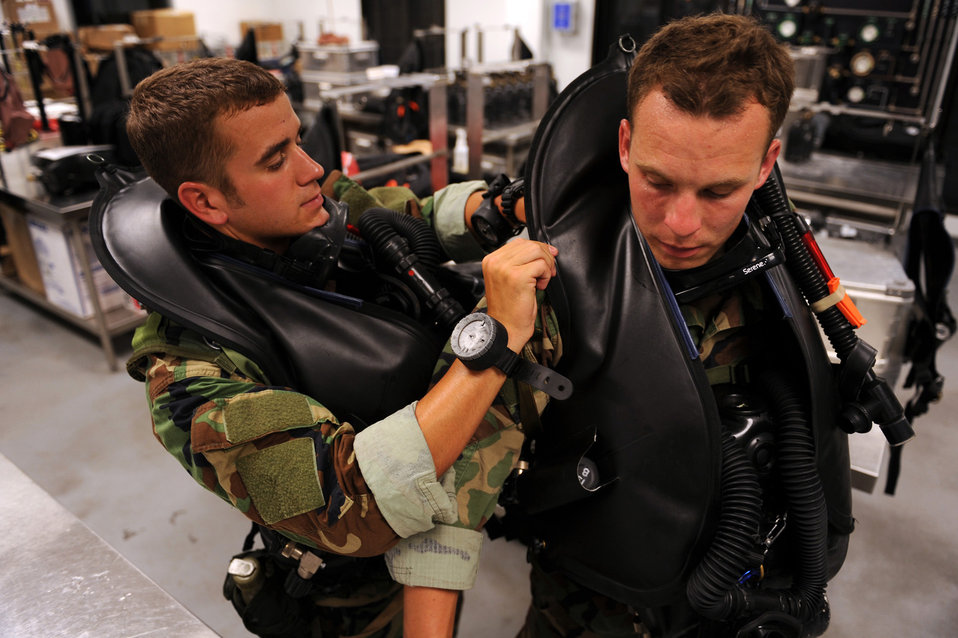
Tyndall Airmen prepare for morning dive

Airmen assist their wingmen with dive gear before heading out for an early morning dive during their combat dive course June 10, 2010, at Panama City Beach, Fla. The Airmen are combat controllers in training assigned to the 342nd Training Squadron Det. 2.